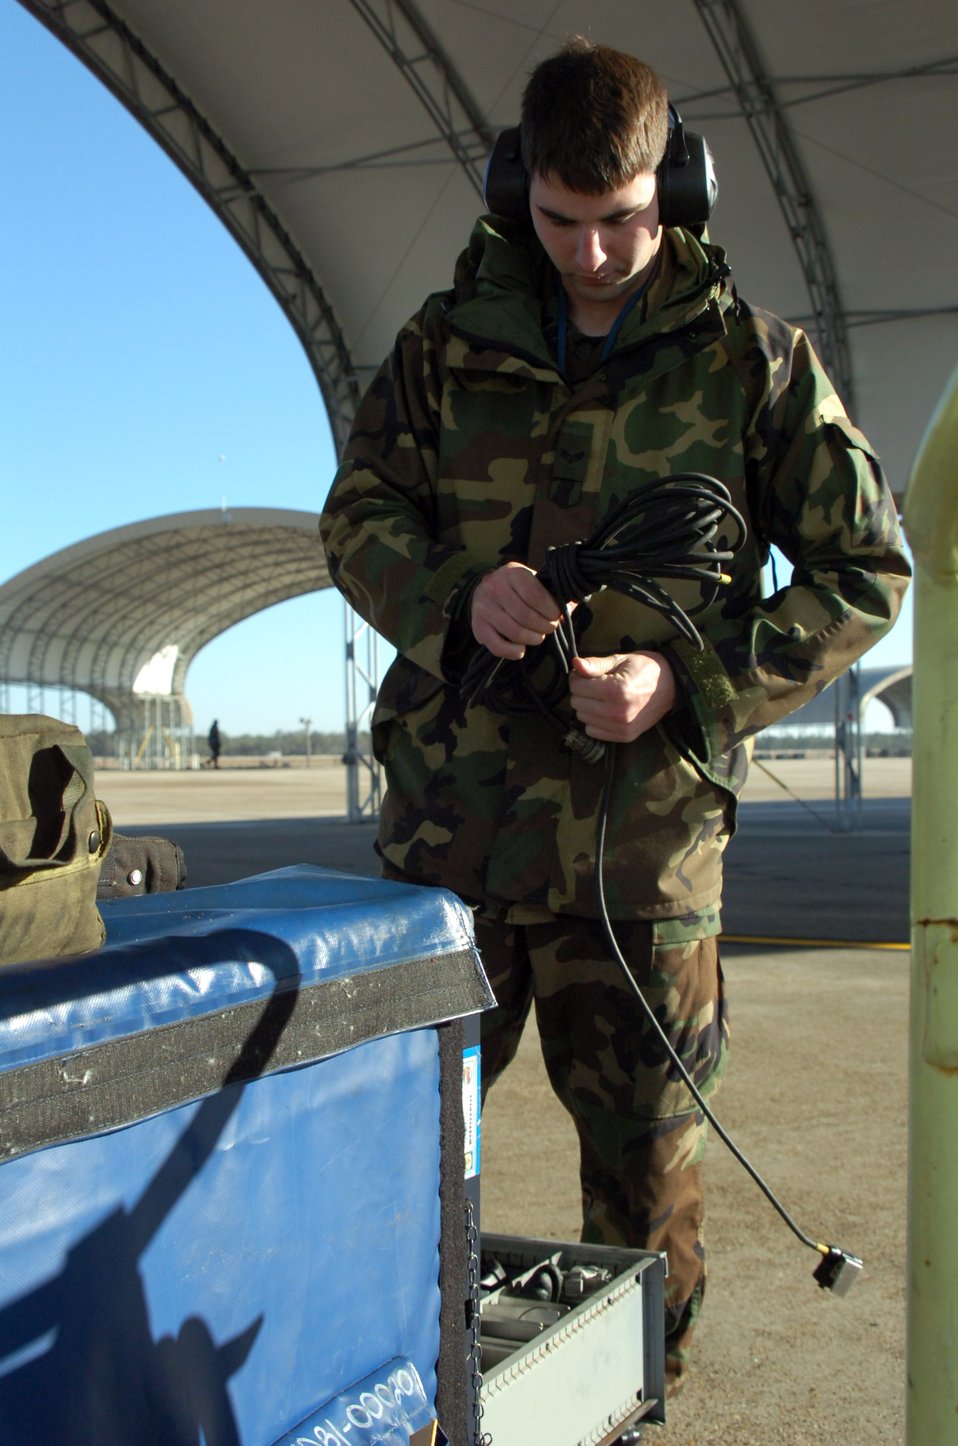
Eagle maintainers

EGLIN AIR FORCE BASE, Fla. (AFPN) -- Crew chief Senior Airman Dennis McKelvey wraps and inspects his ground communications cord after successfully launching his F-15 Eagle. The Airman is with the 58th Aircraft Maintenance Unit.